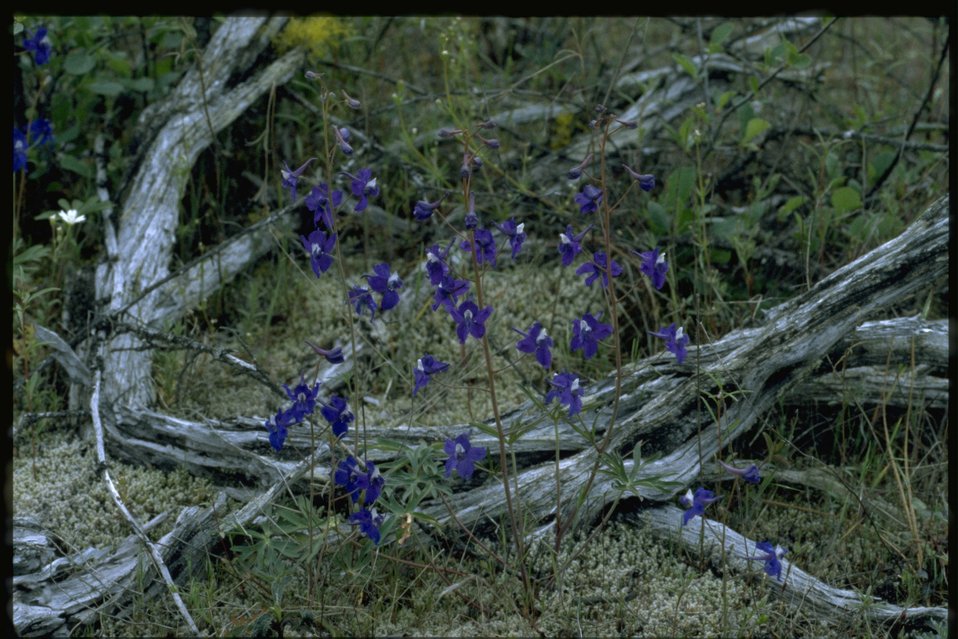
Farshot of Delphinium wildflowers.